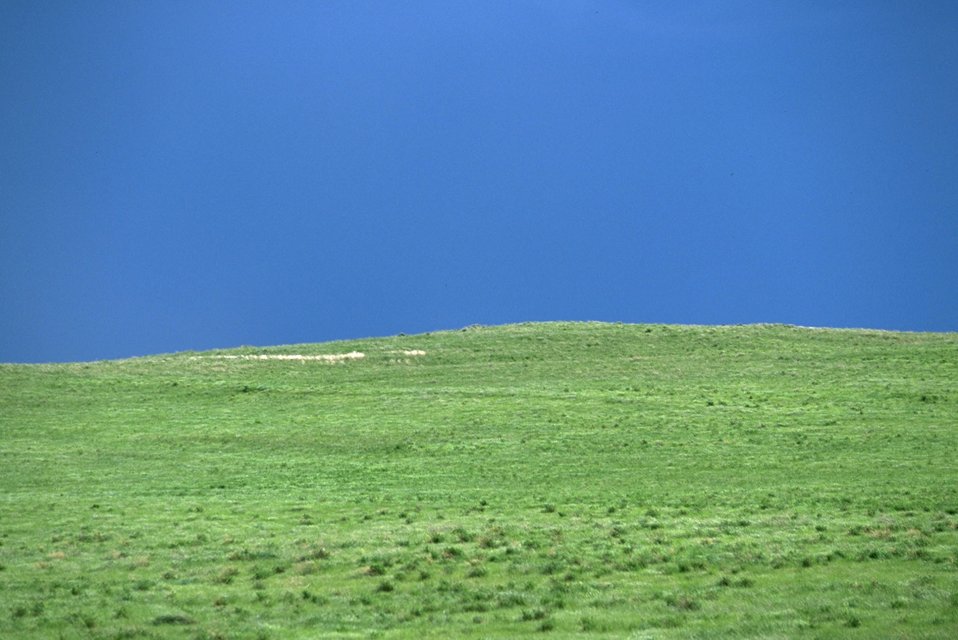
Green grassy slope against the blue sky